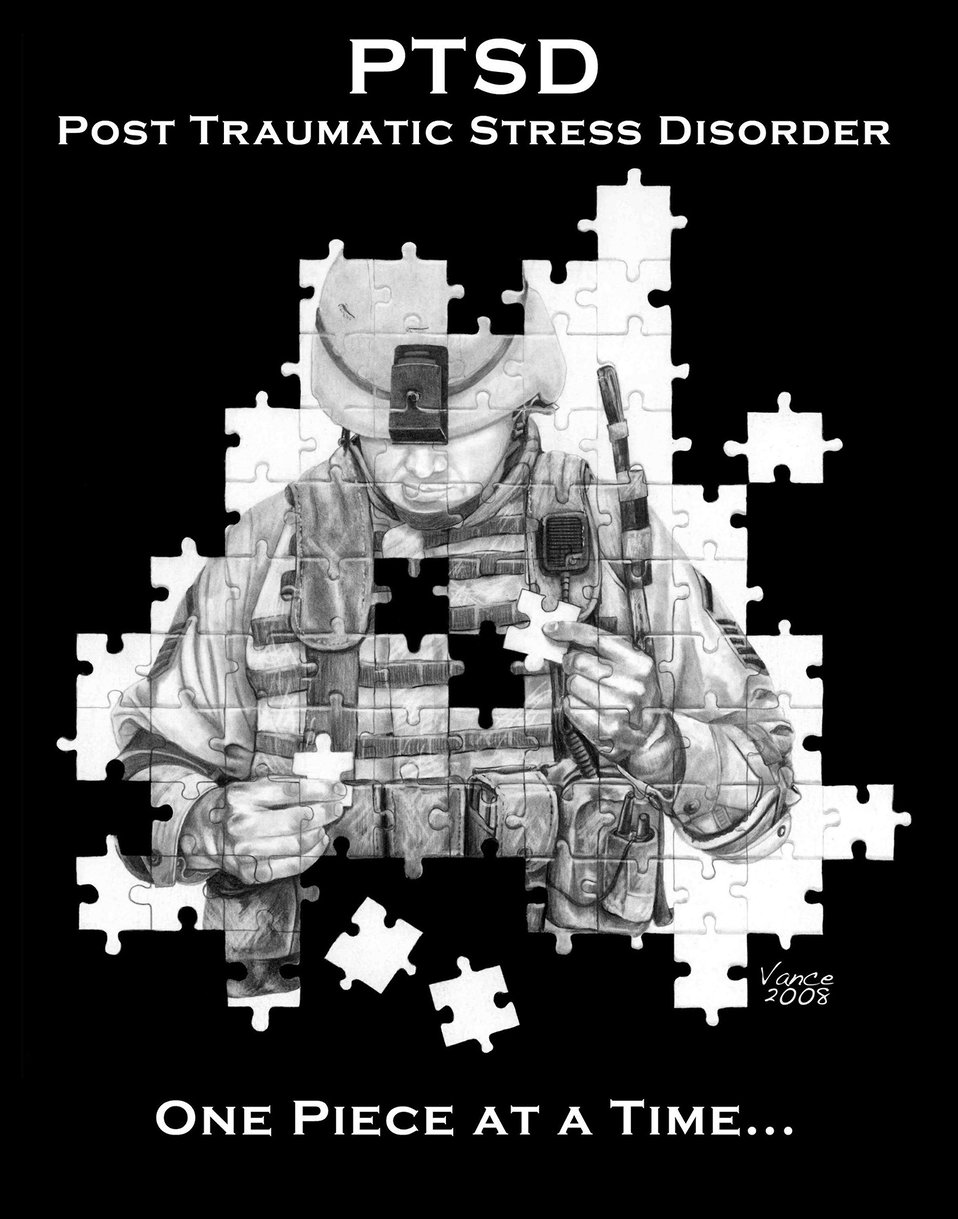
New approach to PTSD offers servicemembers greater privacy, reduced stigma

Servicemembers seeking help for deployment-related post-traumatic stress disorder now have the option of being treated through primary care channels at a new pilot program offered at Wilford Hall Medical Center at Lackland Air Force Base, Texas.